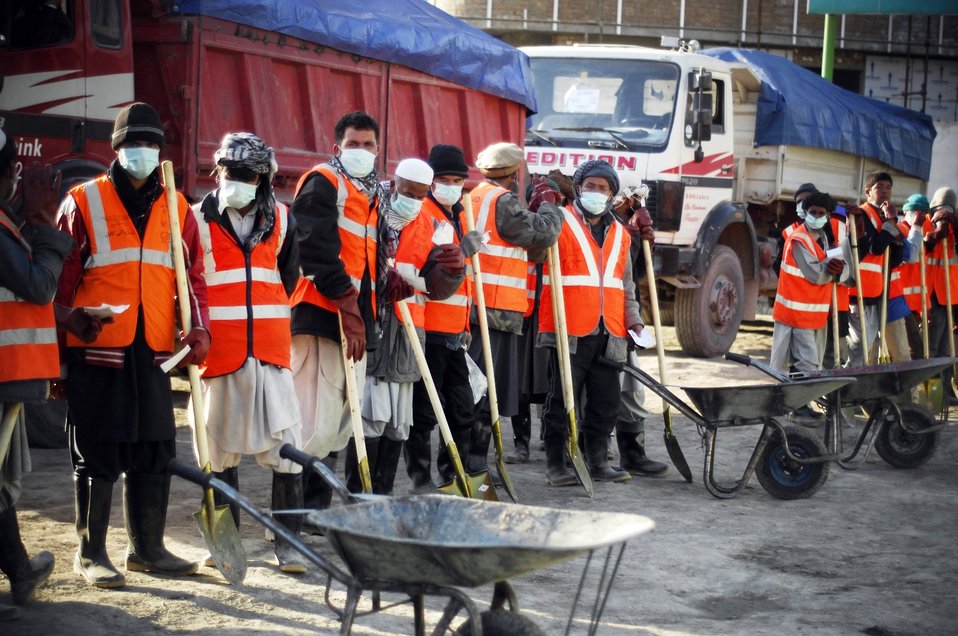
Care02